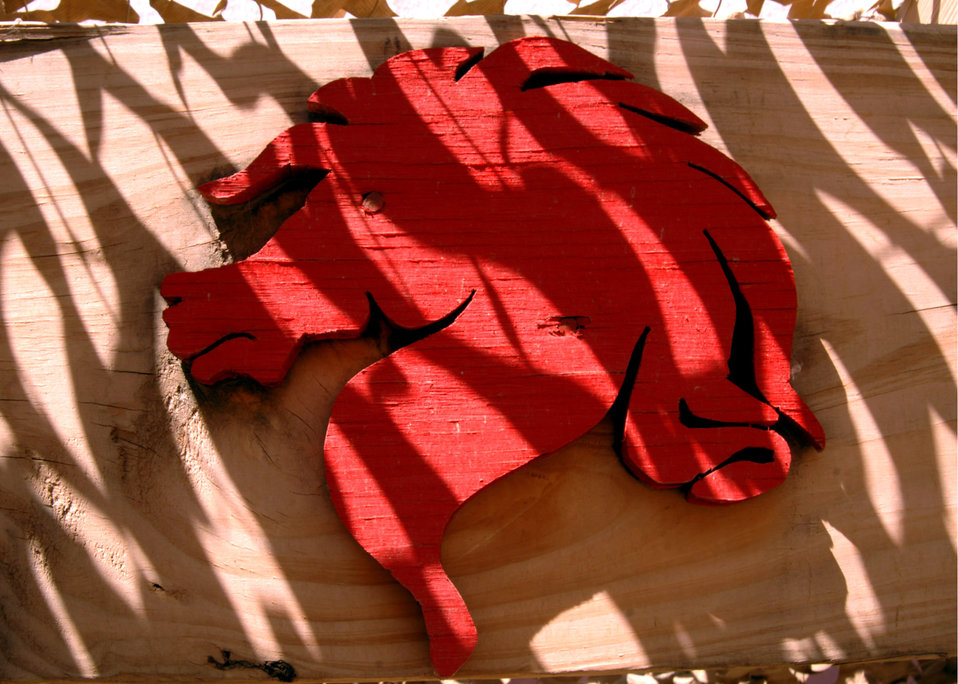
RED HORSE helps build combat brigade base in 45 days

Pictured, is a wood-carved RED HORSE shield. RED HORSE stands for Rapid Engineer Deployable Heavy Operational Repair Squadron. The shield signifies unit pride and excellence in construction.